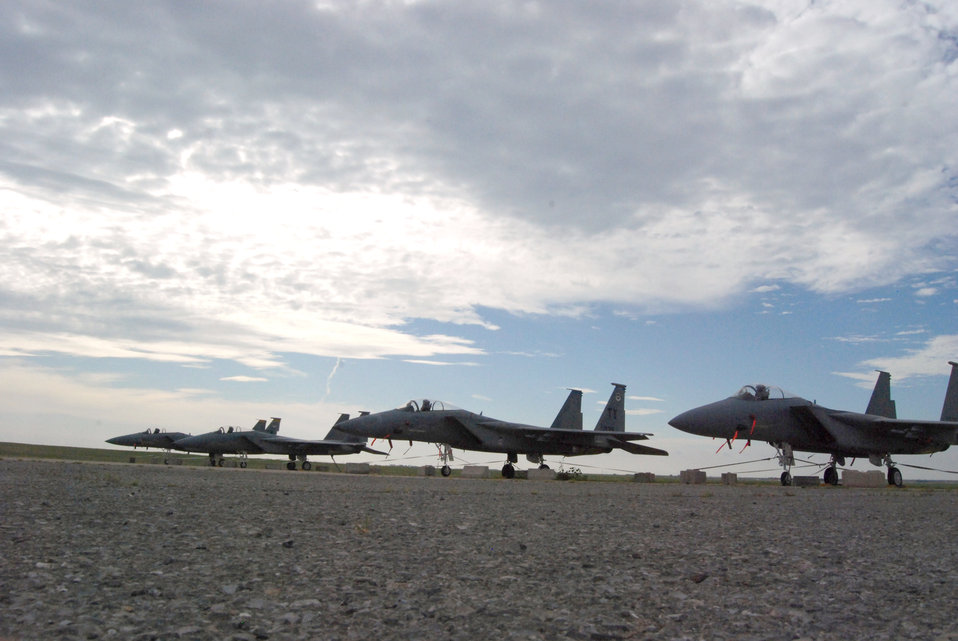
Newer F-15s

F-15C Eagles are parked on a ramp July 23, 2010, on Sheppard Air Force Base, Texas, after being altered to serve as a trainer for the 82nd Training Group and 782nd TRG F-15 courses.